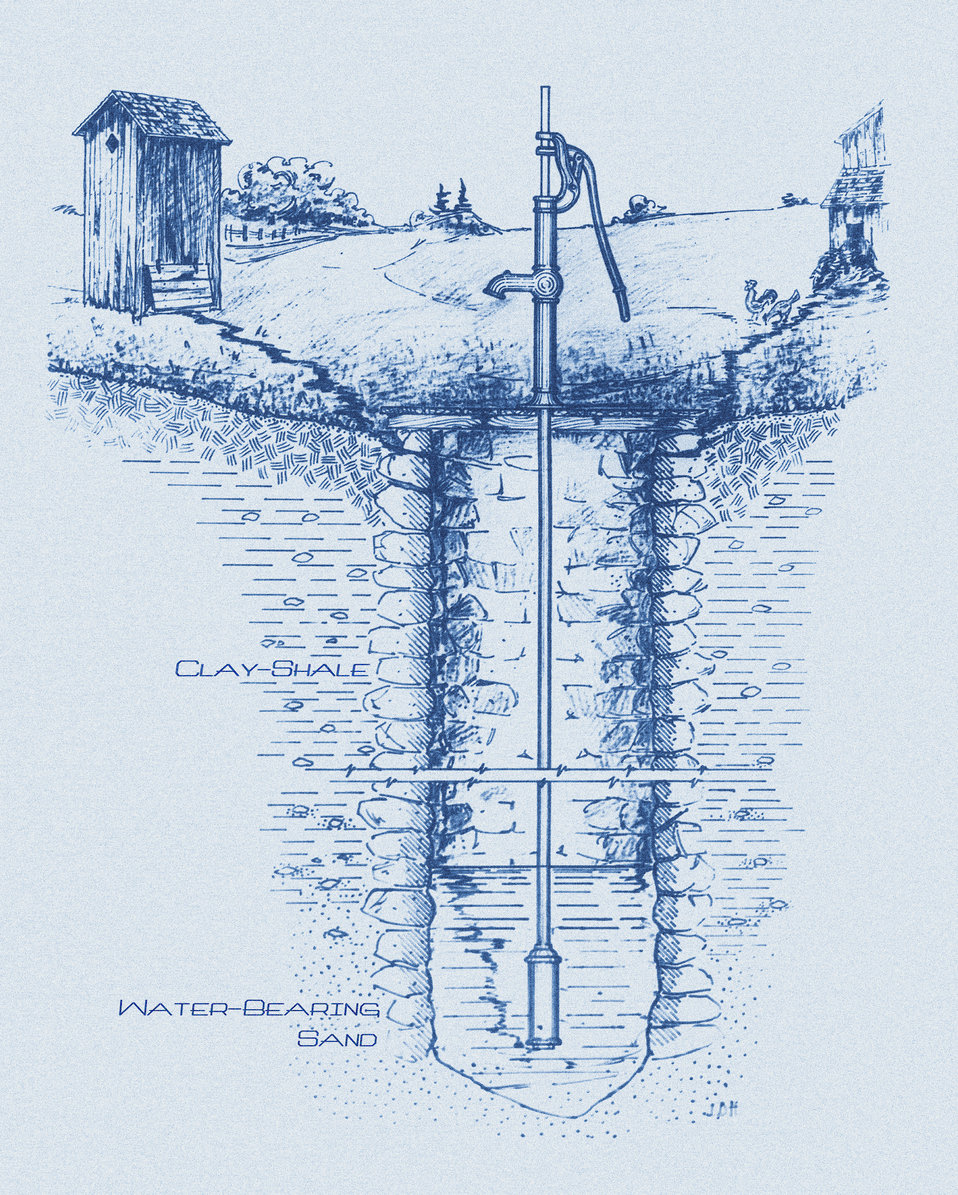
This historic diagram, which had been digitally enhanced and colorized, described an improperly located, and poorly constructed, 'dug' type well, and showed how pollution from a nearby privy could enter the potable water supply. Published in 1915, this was one of a series of instructional drawings used by the Minnesota Board of Health to train its state public health workers.